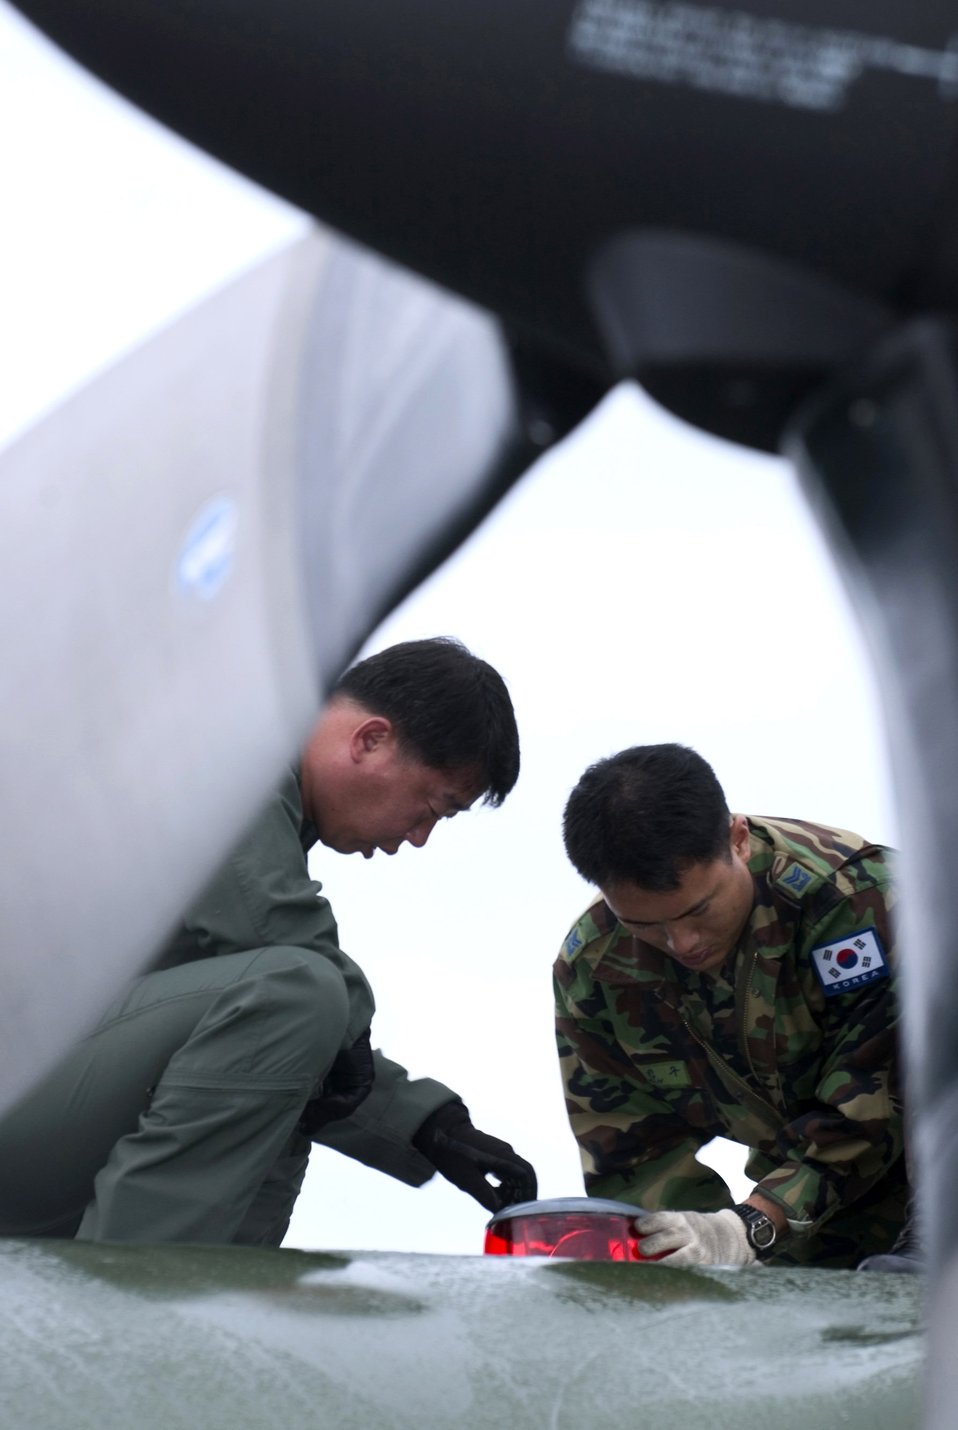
Exercise strengthens U.S., international combat skills

Chief Master Sgt. Jongkyu Lee and Master Sgt. Jinkoo Kim repair an anti-collision lamp on a C-130 Hercules at Elmendorf Air Force Base, Alaska, on July 25. They are members of the Korean air force and are participating in Cooperative Cope Thunder, a Pacific Air Forces exercise that ends Aug. 5.